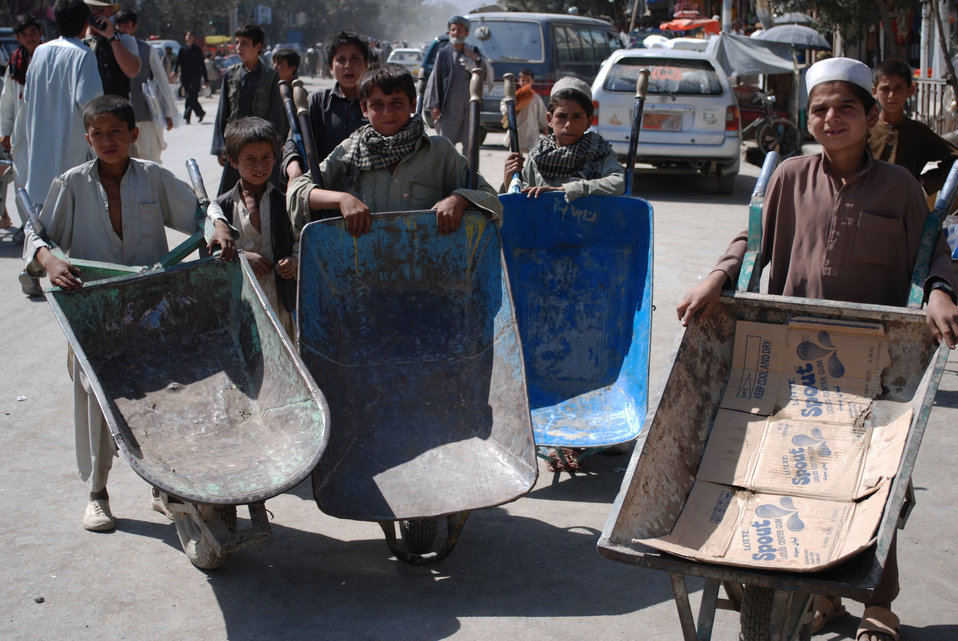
'On the Road' in Paktya Province